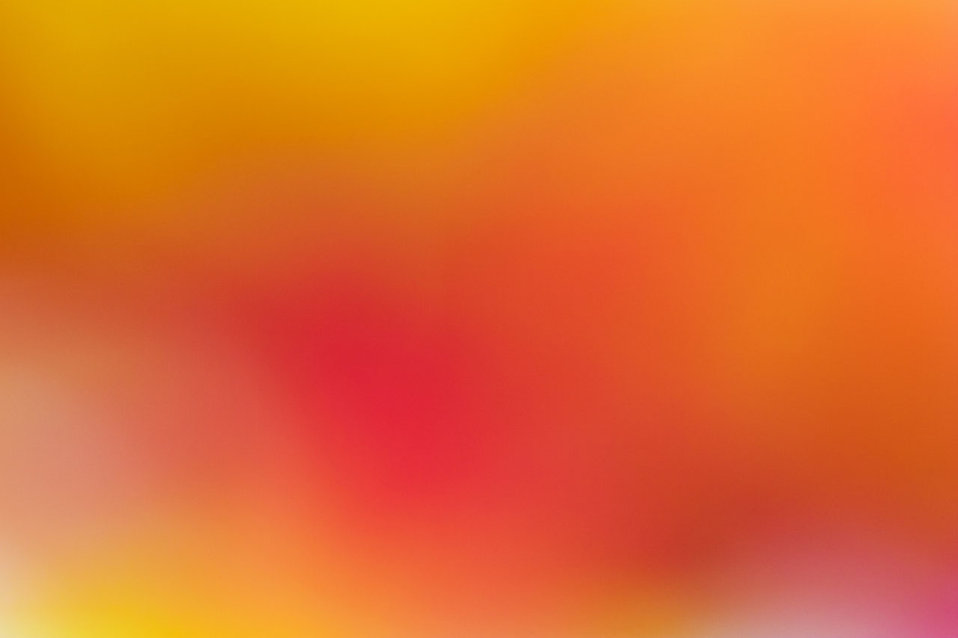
Abstract background using warm colours.